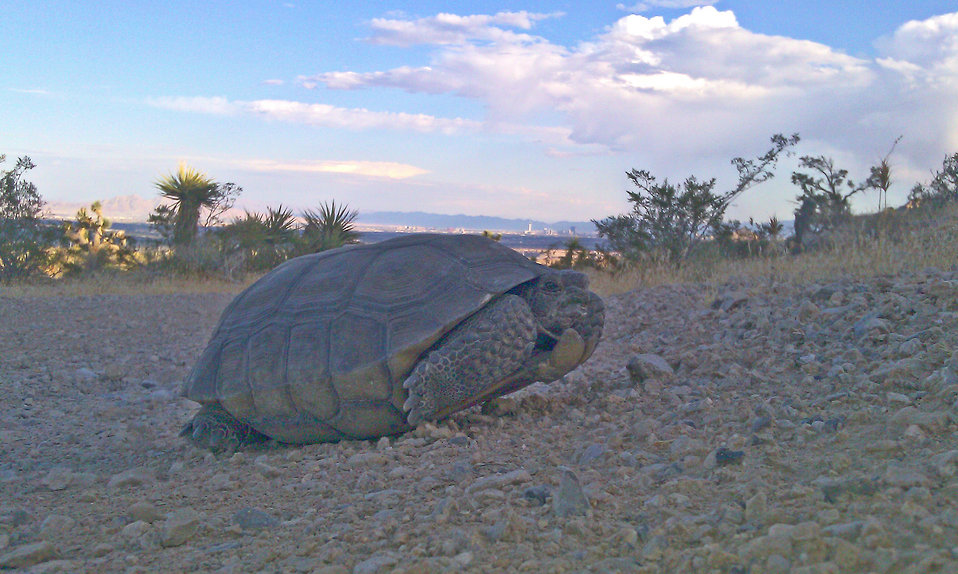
Desert Tortoise3

Desert tortoise near Las Vegas.